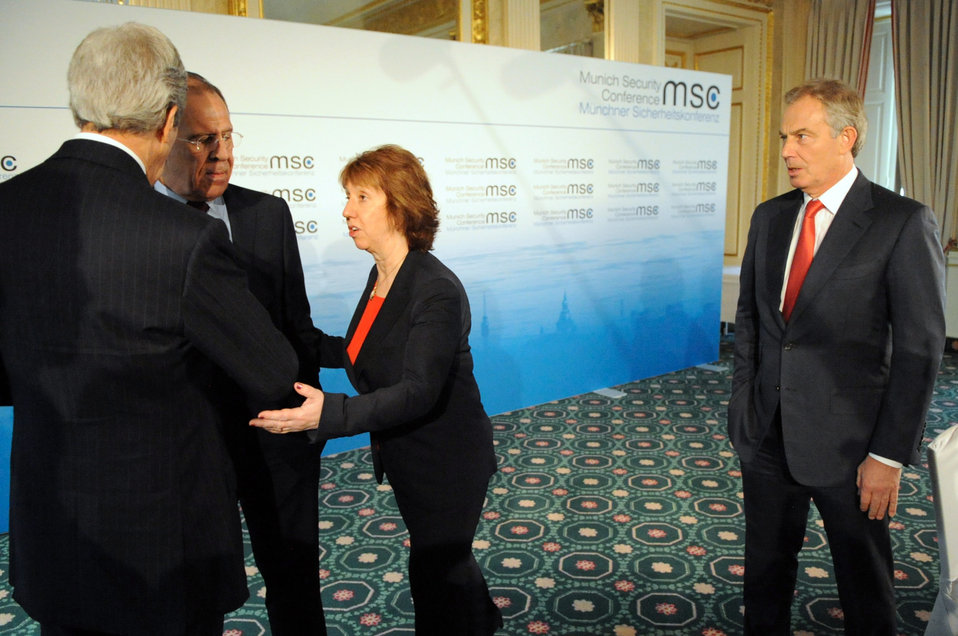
Quartet Members Gather on Sidelines of Munich Security Council

European Union High Representative for Foreign Affairs Catherine Ashton gathers members of the Quartet on the Middle East for a photo before a meeting on the sidelines of the Munich Security Conference in Munich, Germany, on February 1, 2014.